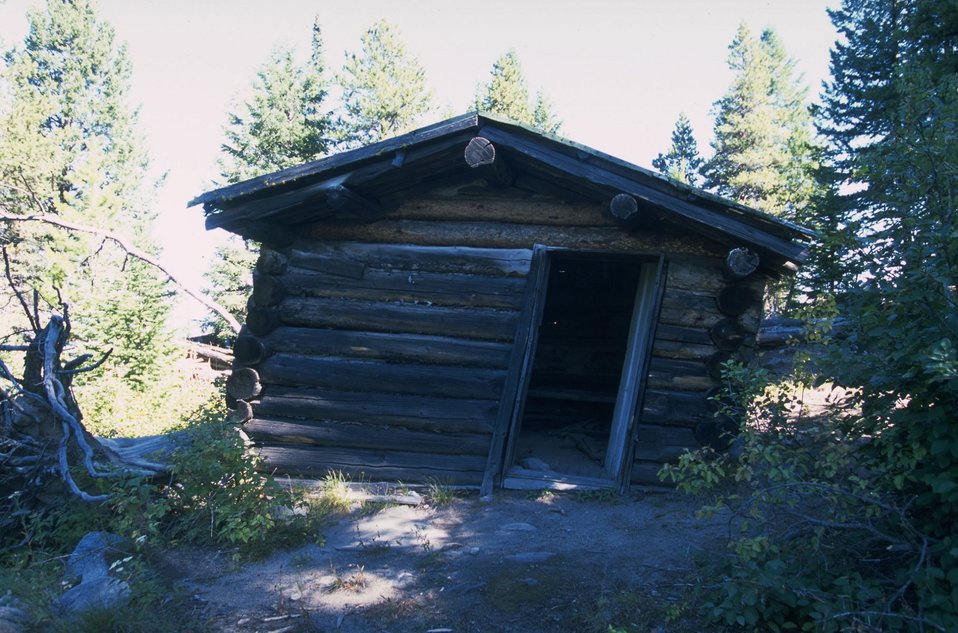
Historic cabin in Coloma Ghost Town